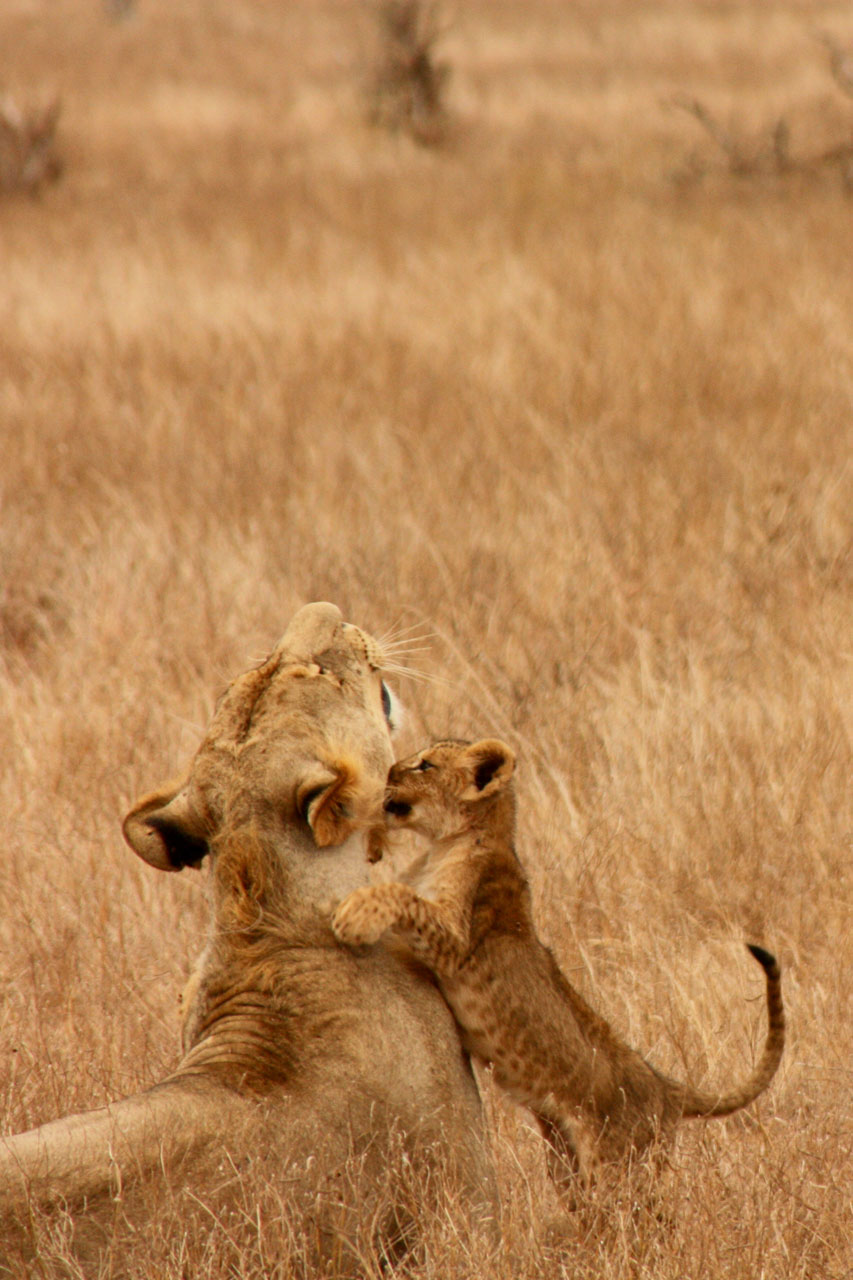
Lions

Lion with the baby.